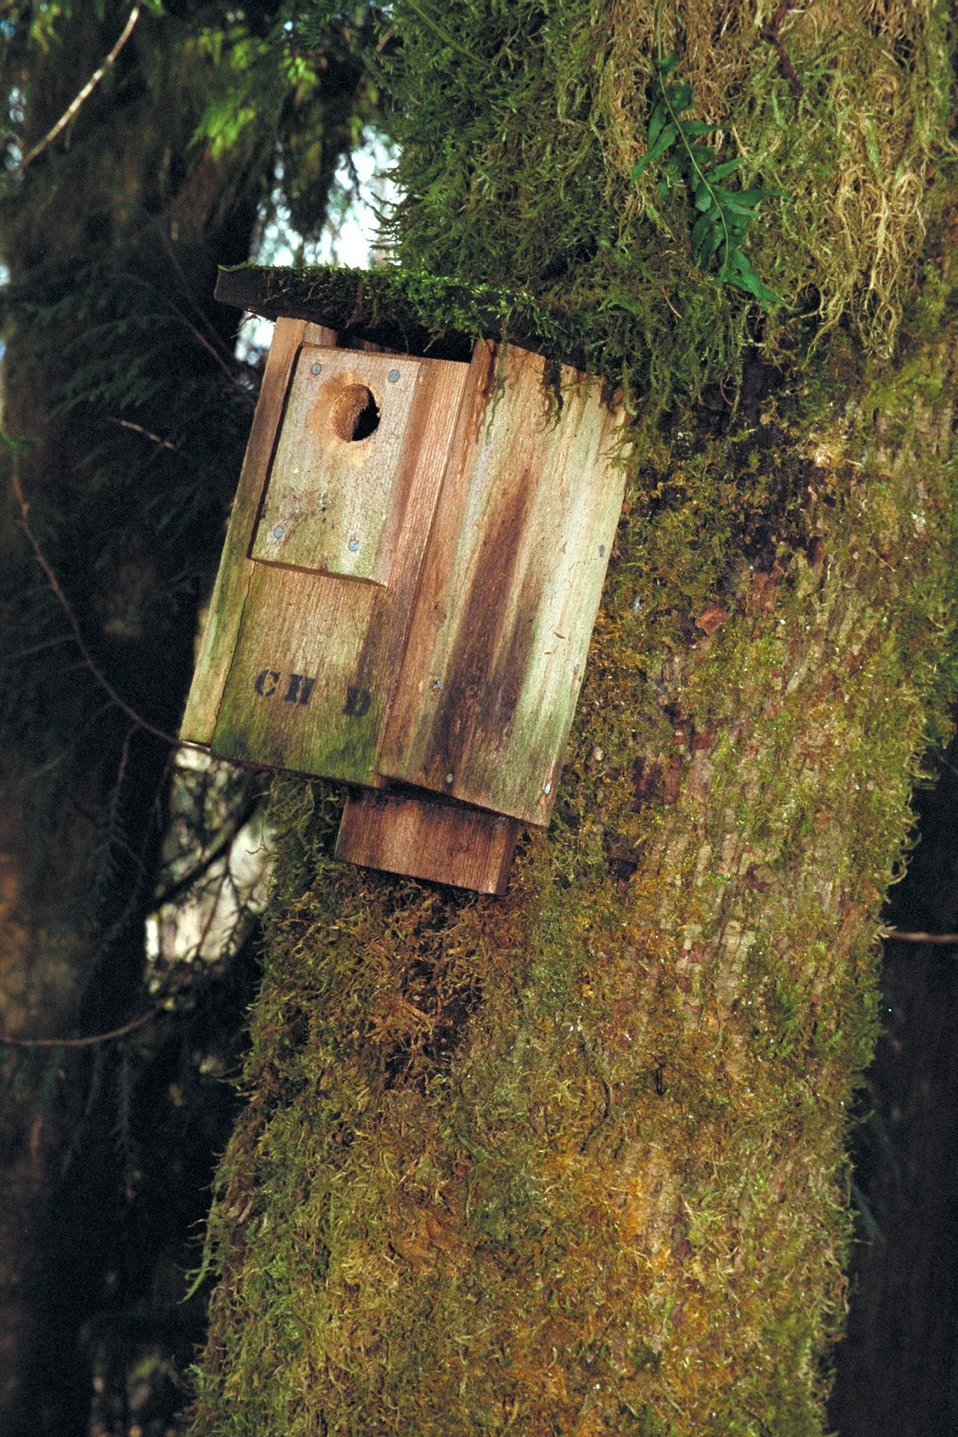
Cascade Stream Watch is an environmental education program conducted at BLM's Wildwood Recreation site.